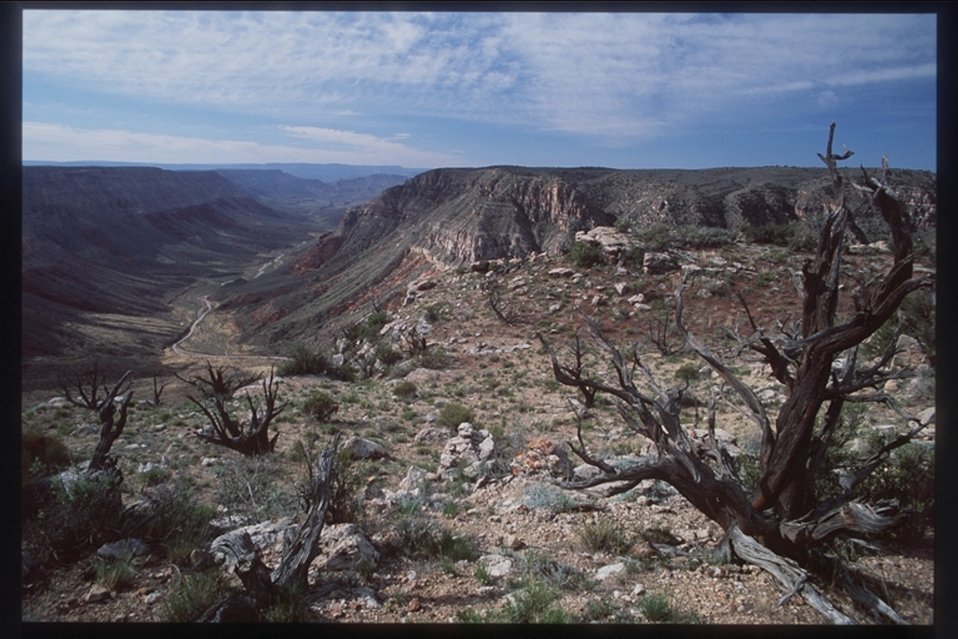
The majestic Grand Canyon stretches far into the horizon.